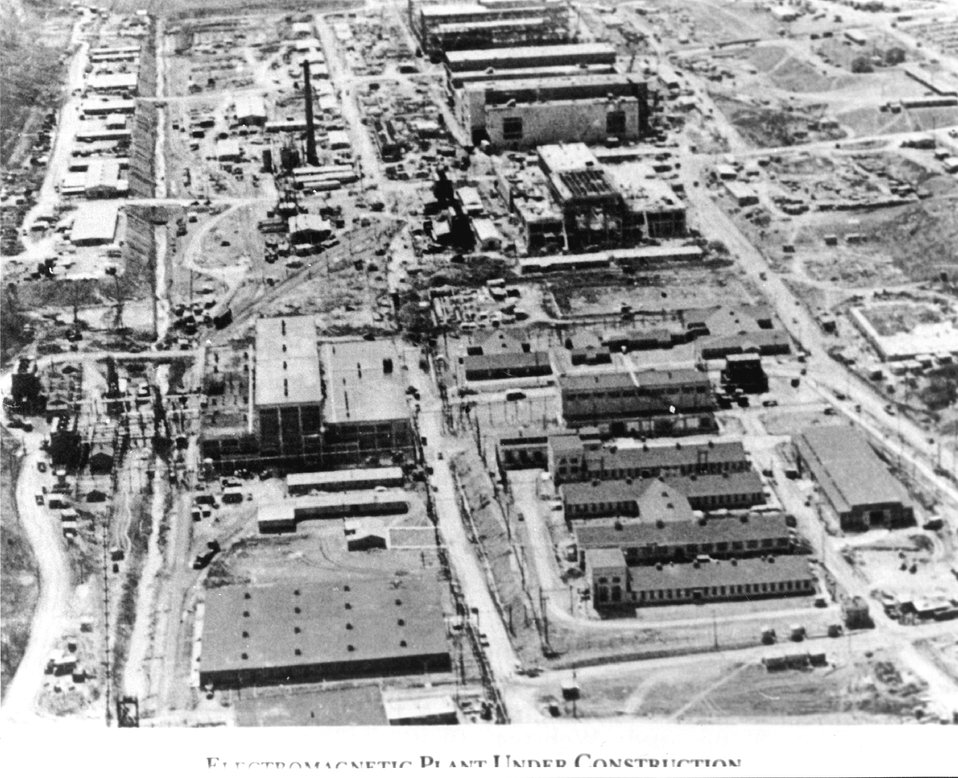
Y-12 Electromagnetic Plant under construction at Clinton. c. undated